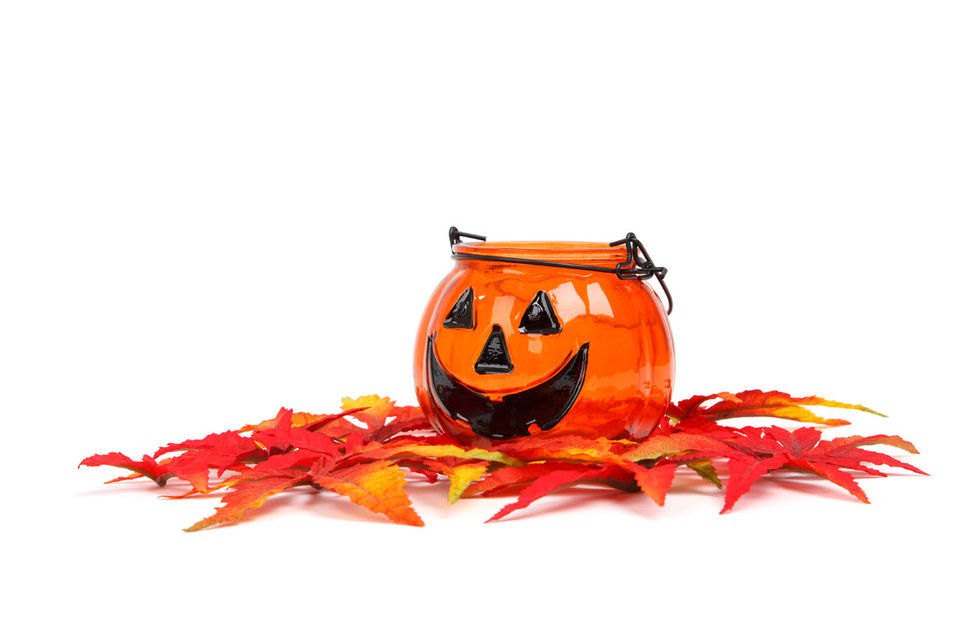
Jack-o-lantern candle holder

Jack-o-lantern halloween candle holder with leaves isolated on white background.